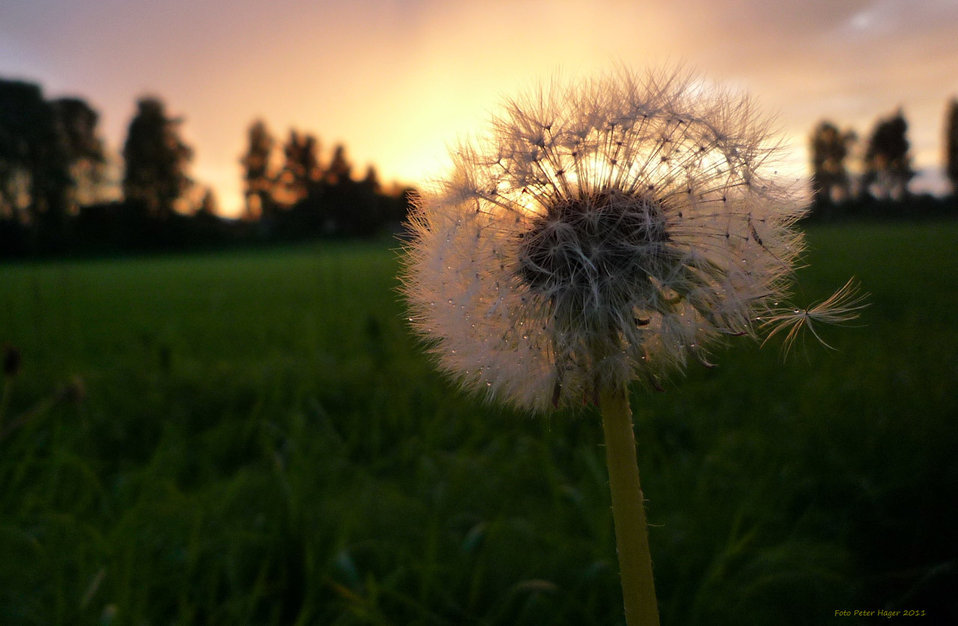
Dandelion clock seed head.